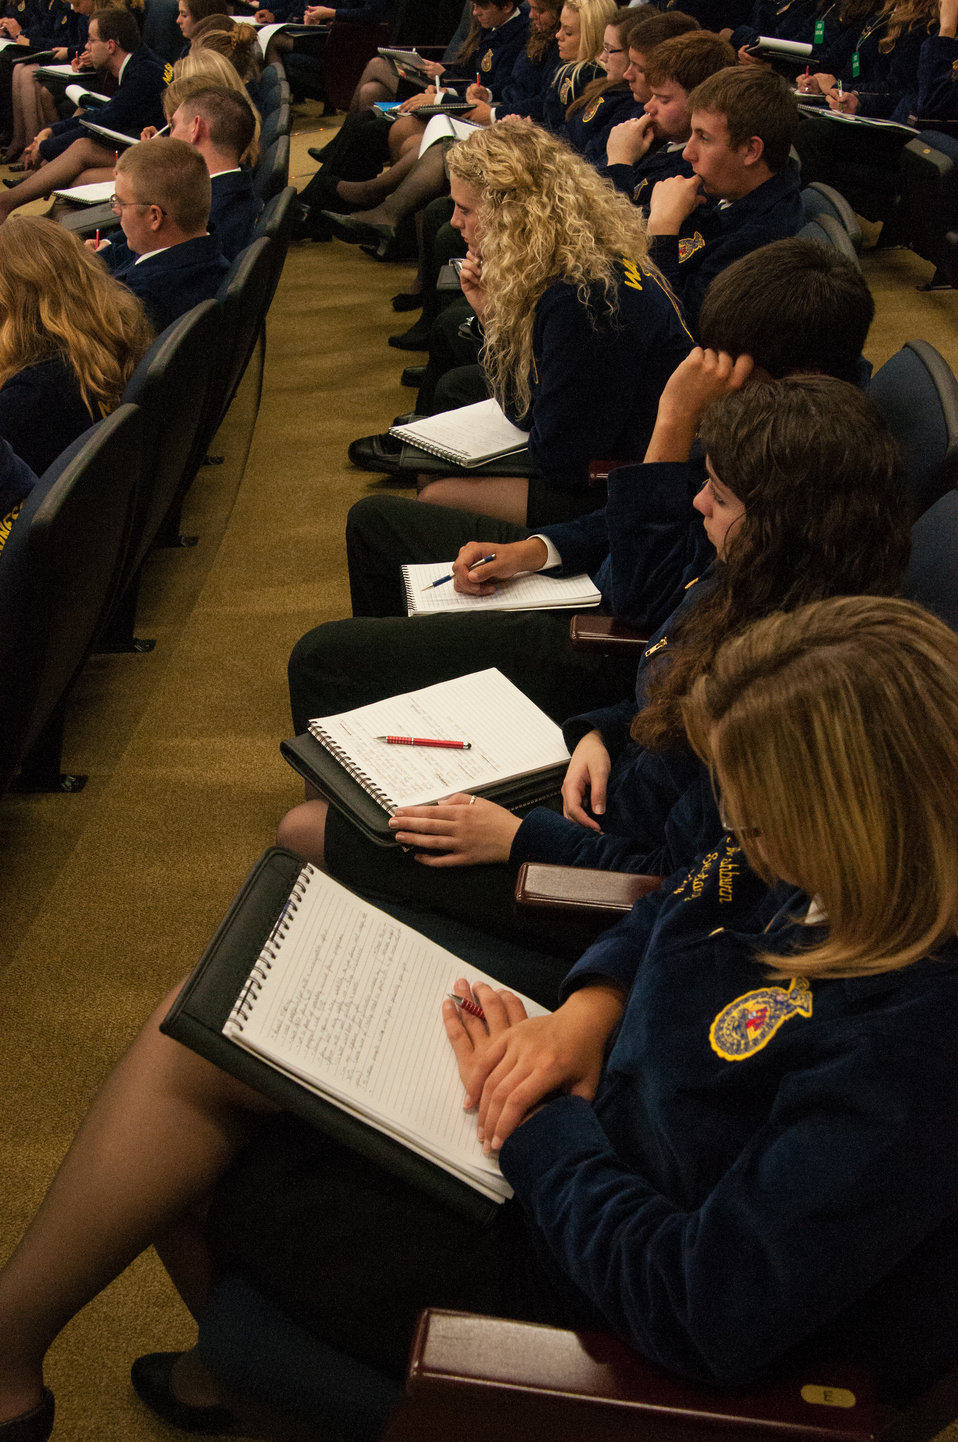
Agriculture Secretary Tom Vilsack speaks at a meeting of the White House Rural Council to an audience of the National State President’s Conference of the FFA on Wednesday, Jul. 24, 2013 in Washington, D.C. Secretary Vilsack took questions from the audience and discussed international, national and agricultural production topics with the FFA State President’s.